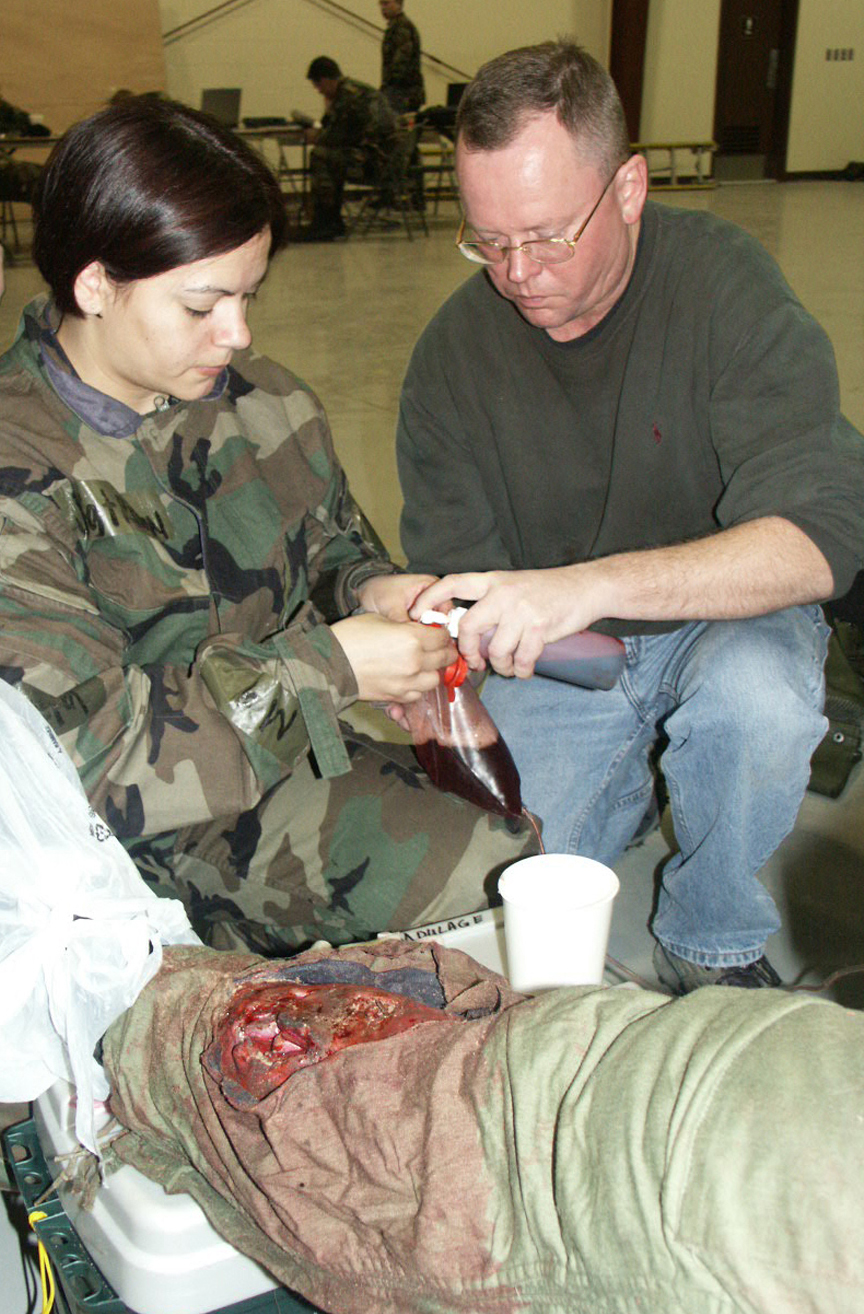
Moulage

TAEGU AIR BASE, South Korea -- Staff Sgt. Sonia Rincon (left) and Capt. Ken Brown fill a bag with fake blood as they apply injuries to a simulated victim. Both are assigned to the 353rd Operations Support Squadron medical flight at Kadena Air Base, Japan. These fake wounds, known as moulage, add to the realism of casualty exercises.